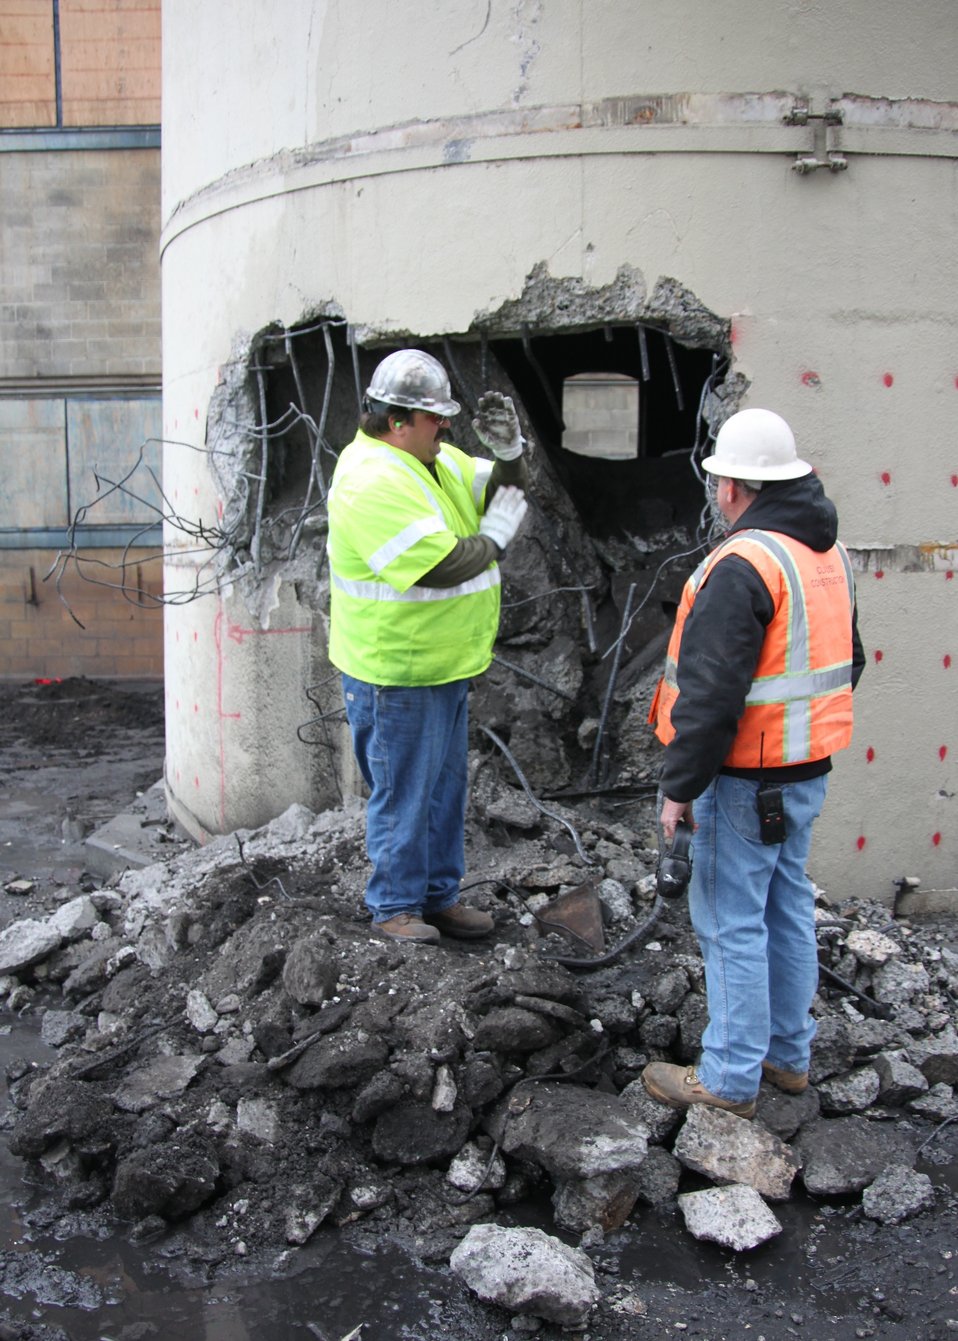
Richland Small Businesses

Recovery Act workers prepare the base of a structure for demolition. The Hanford Site worked with small businesses Clauss Construction and Controlled Demolition, Inc., to complete the explosive demolition of several high-rise structures on Hanford’s Central Plateau.